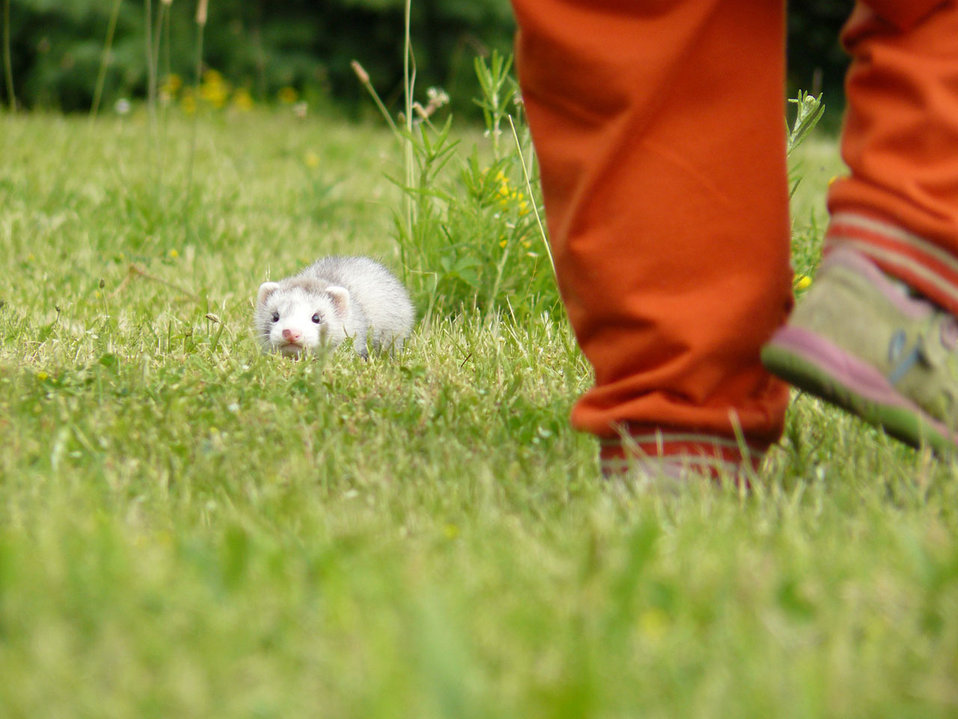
Ferrets and kid

Ferret lurking.